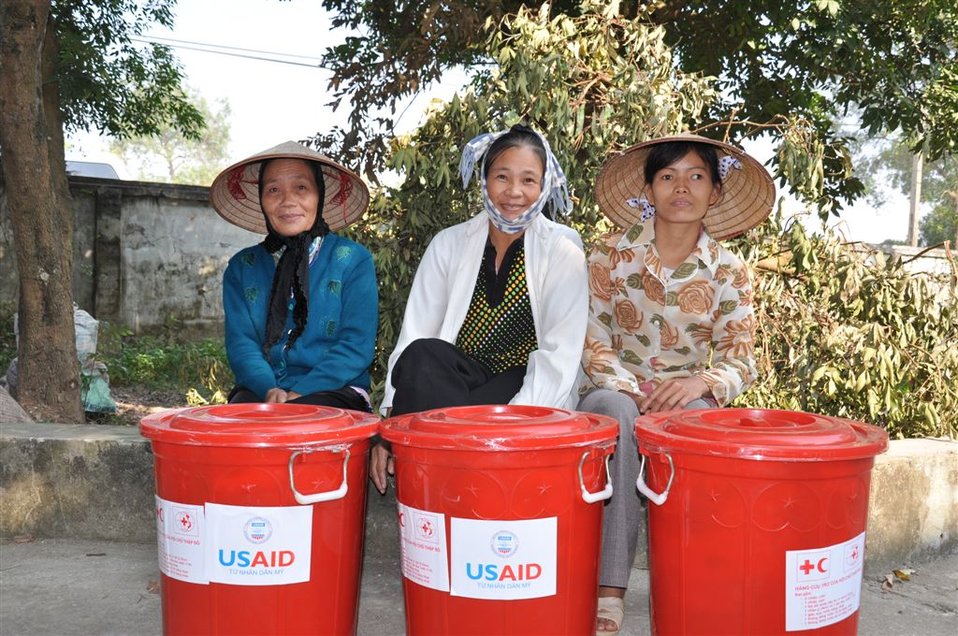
USAID provides household kits to families affected by flooding near Hanoi